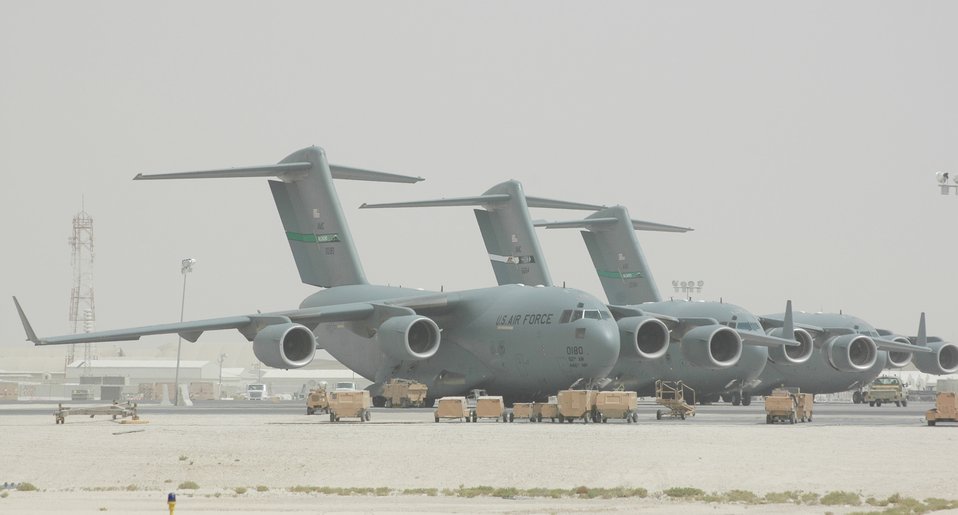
July 21 airpower summary

C-17 Globemaster IIIs await fuel, freight and flight crews at a forward deployed location. C-17s contributed to 141 coalition airlift sorties and moved approximately 450 people around the area of responsibility July 21.